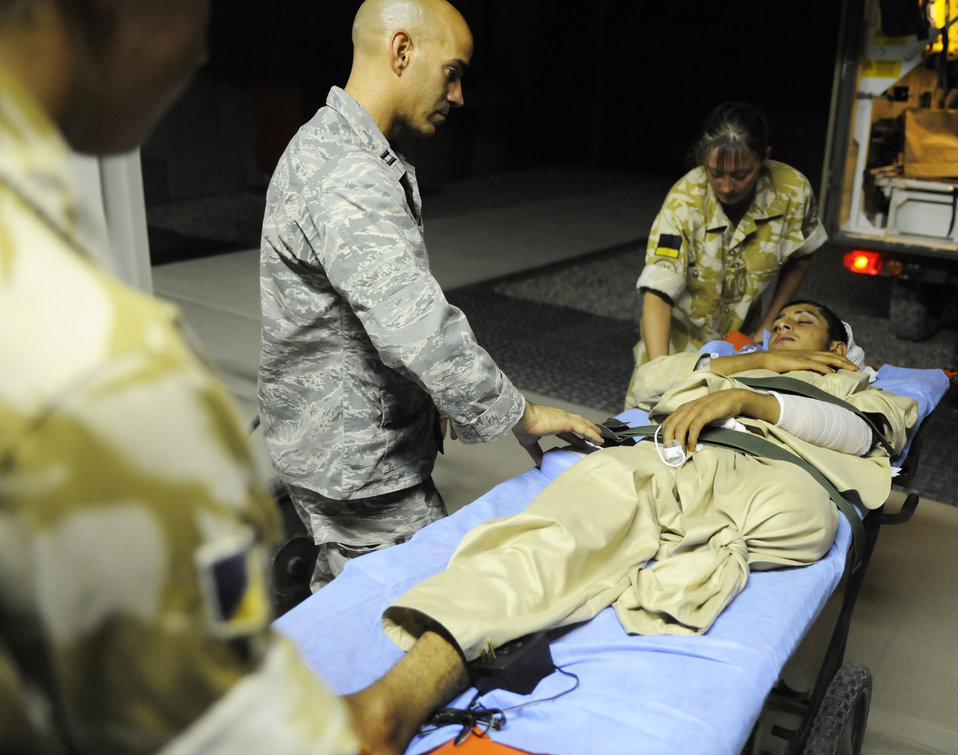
Airmen coordinate smooth transition of wounded to higher medical care

Capt. Jac Solghan comforts an Afghan boy who is returning home after weeks of care and rehabilitation by U.S. and Afghan medical personnel June 23 at Camp Bastion, Afghanistan. The boy lost his leg when a landmine exploded as he was walking along a road. Captain Solghan is the Aeromedical Evacuation Liaison Team flight clinical coordinator.